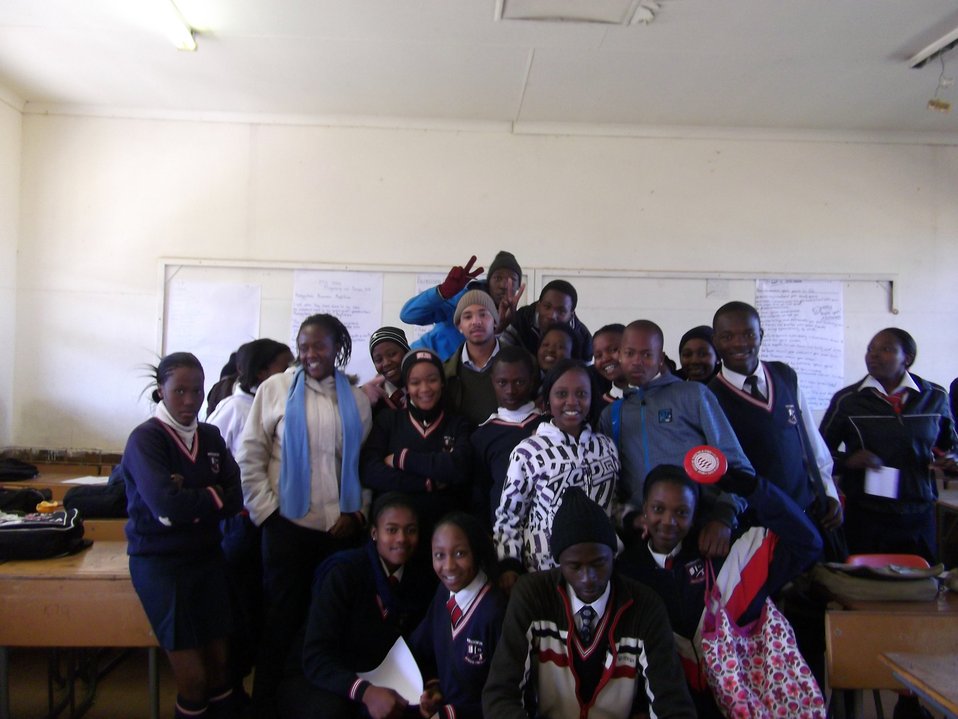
Pickering Fellow Roberts and South African Students Smile for a Photo

U.S. Department of State Pickering Fellow Tau Shanklin Roberts poses for a photo with students participating in an English Skills Workshop organized by the English Language Office of the U.S. Embassy Pretoria at the Buhlebenfundo Secondary School in Tskane, Gauteng Province, South Africa, on June 15, 2010.